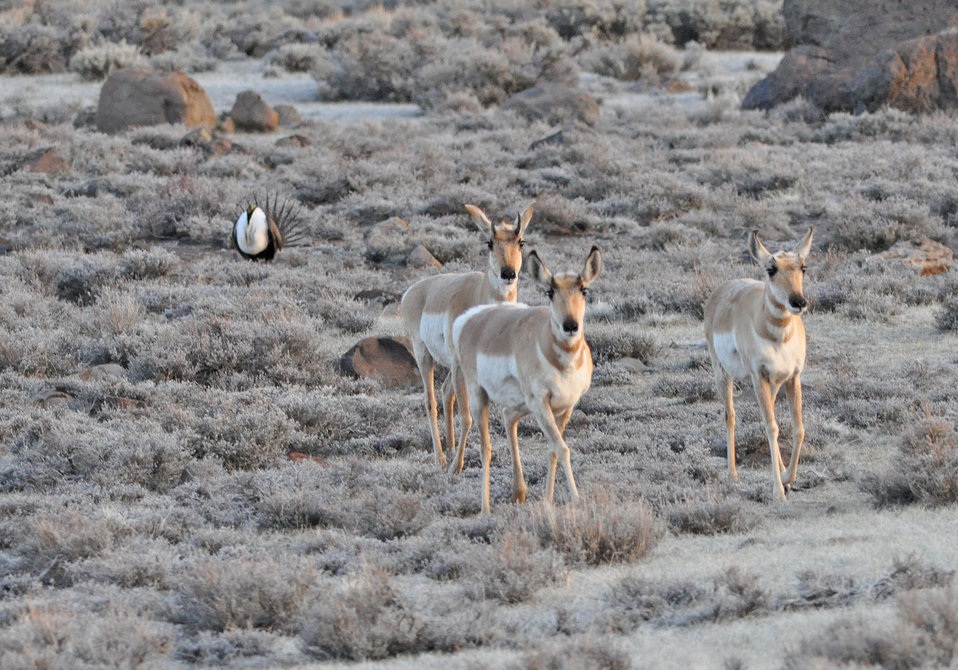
Antelope & Greater Sage-Grouse

Photo Credit: Jeannie Stafford/USFWS
Pronghorn (Antilocapra americana) are endemic to interior western and central North America. In North America they are commonly referred to as pronghorn antelope or simply antelope as it closely resembles the true antelopes of the Old World. They can run exceptionally fast and they are often cited as the second-fastest land animal, second only to the cheetah. These females were photographed at a greater sage-grouse lek near Bridgeport, CA.